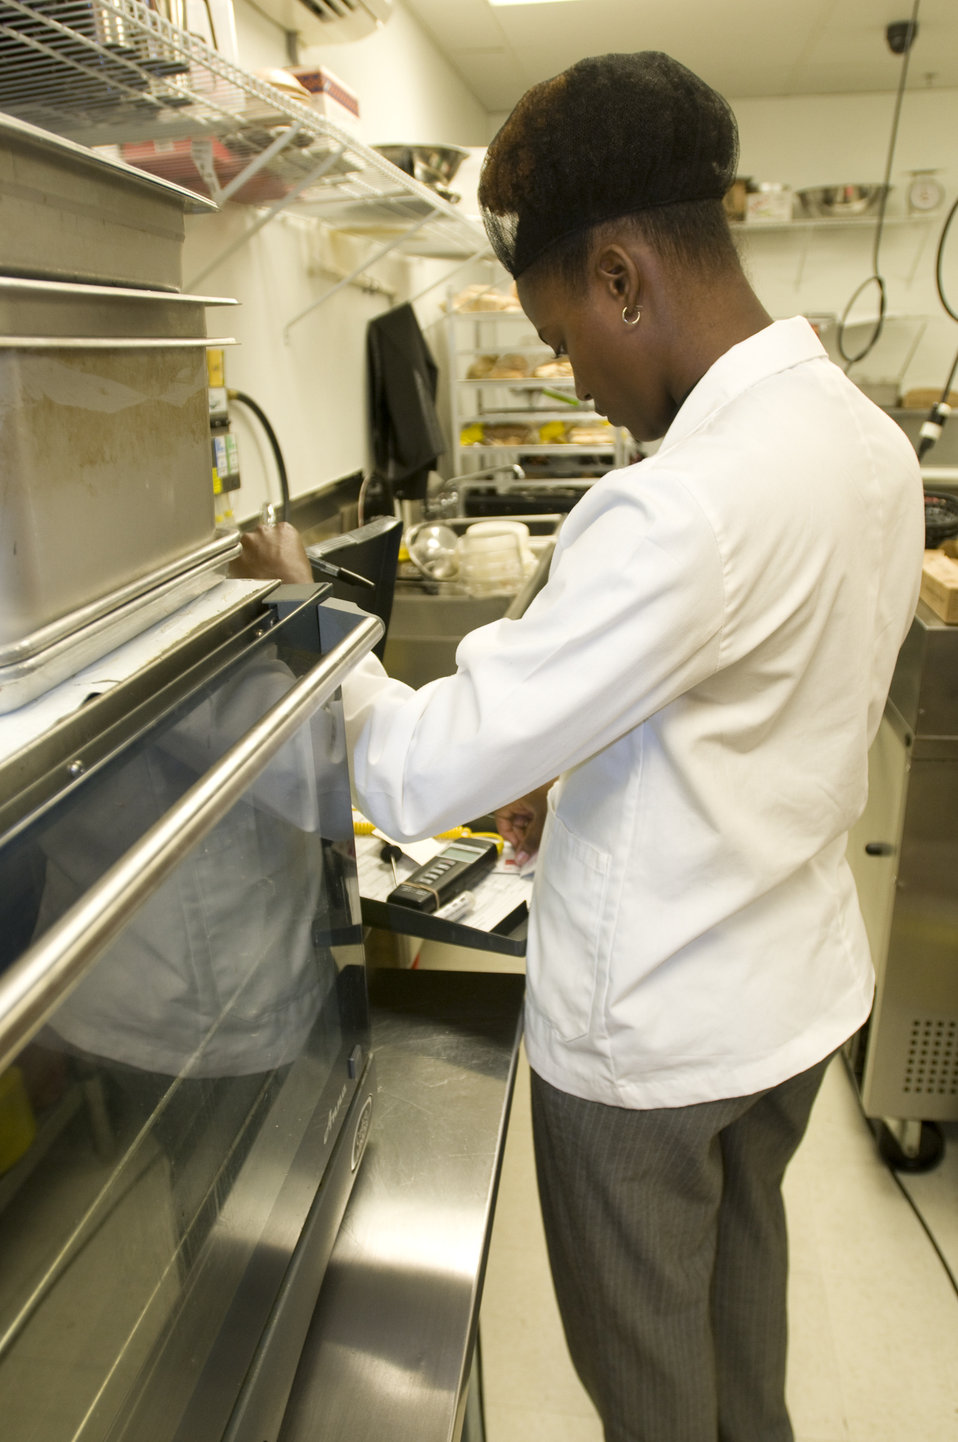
The state-appointed public health inspector pictured here, was checking the sanitary conditions inside a kitchen, and at this point in her inspection, was recording her findings, which she'd subsequently tabulate in order to score this facility. Health inspectors are not only concerned with the transmission of pathogenic organisms due to unsanitary conditions, or with toxic substance contamination, but also with the safety precautions to be taken to insure an environment is generally safe.